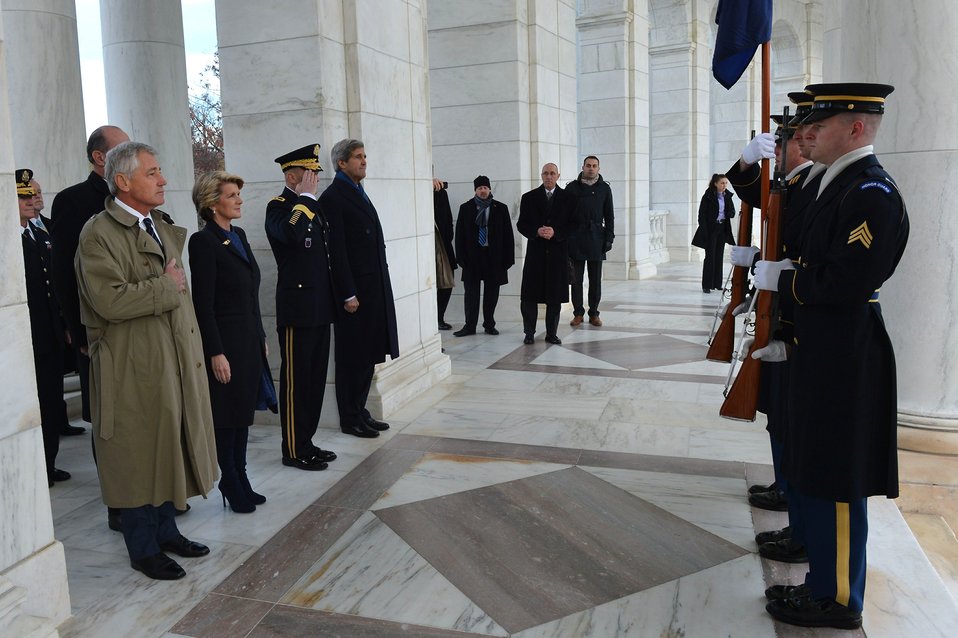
Secretaries Kerry, Hagel and Australian Ministers Bishop, Johnston Participate in a Wreath Laying Ceremony

U.S. Secretary of State John Kerry, U.S. Secretary of Defense Chuck Hagel, Australian Foreign Minister Julie Bishop, and Australian Defence Minister David Johnston participate in a wreath laying ceremony at the Tomb of Unknown Soldier at Arlington National Cemetery in Arlington, Virginia, on November 20, 2013.